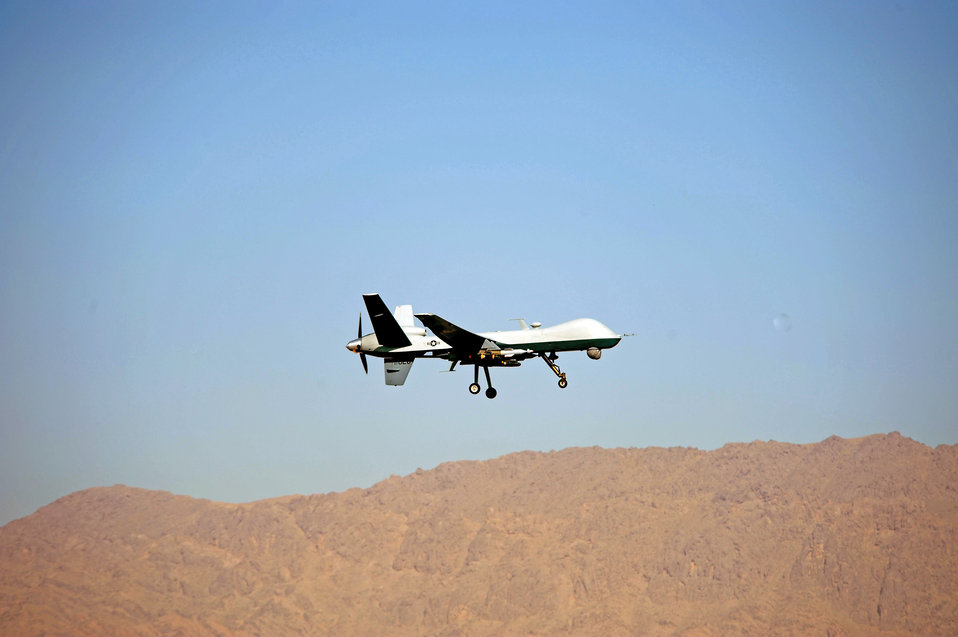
UAs not drones

An Air Force MQ-9 Reaper from the 62nd Expeditionary Reconnaissance Squadron takes off March 13 from Kandahar Air Base, Afghanistan, for a mission in support of Operation Enduring Freedom.